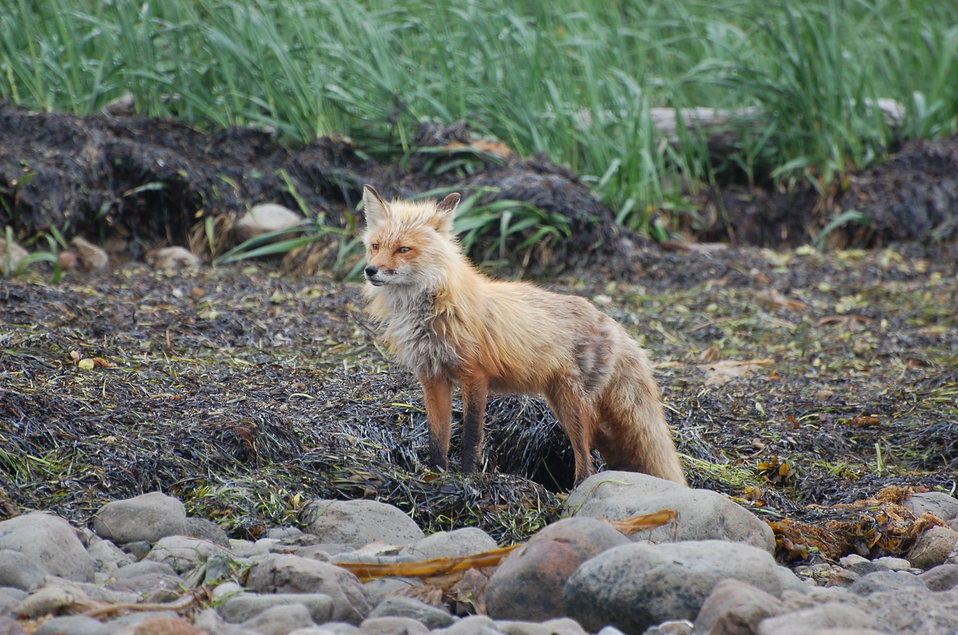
Red Fox at Kinzarof Lagoon

Kinzarof Lagoon, Izembek National Wildlife Refuge